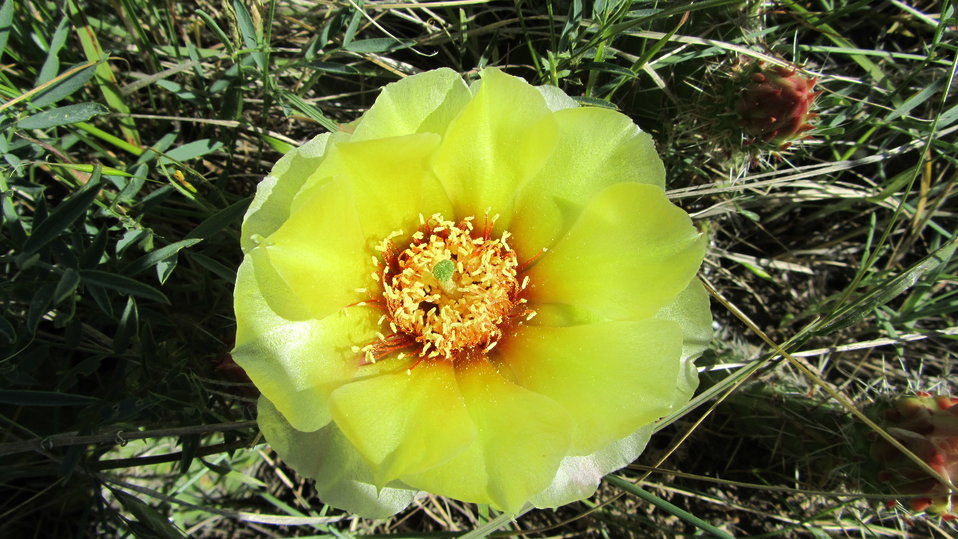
Plains Prickly Pear Cactus Flower

Close up of the prickly pear cactus flower. (Opuntia polyacantha)